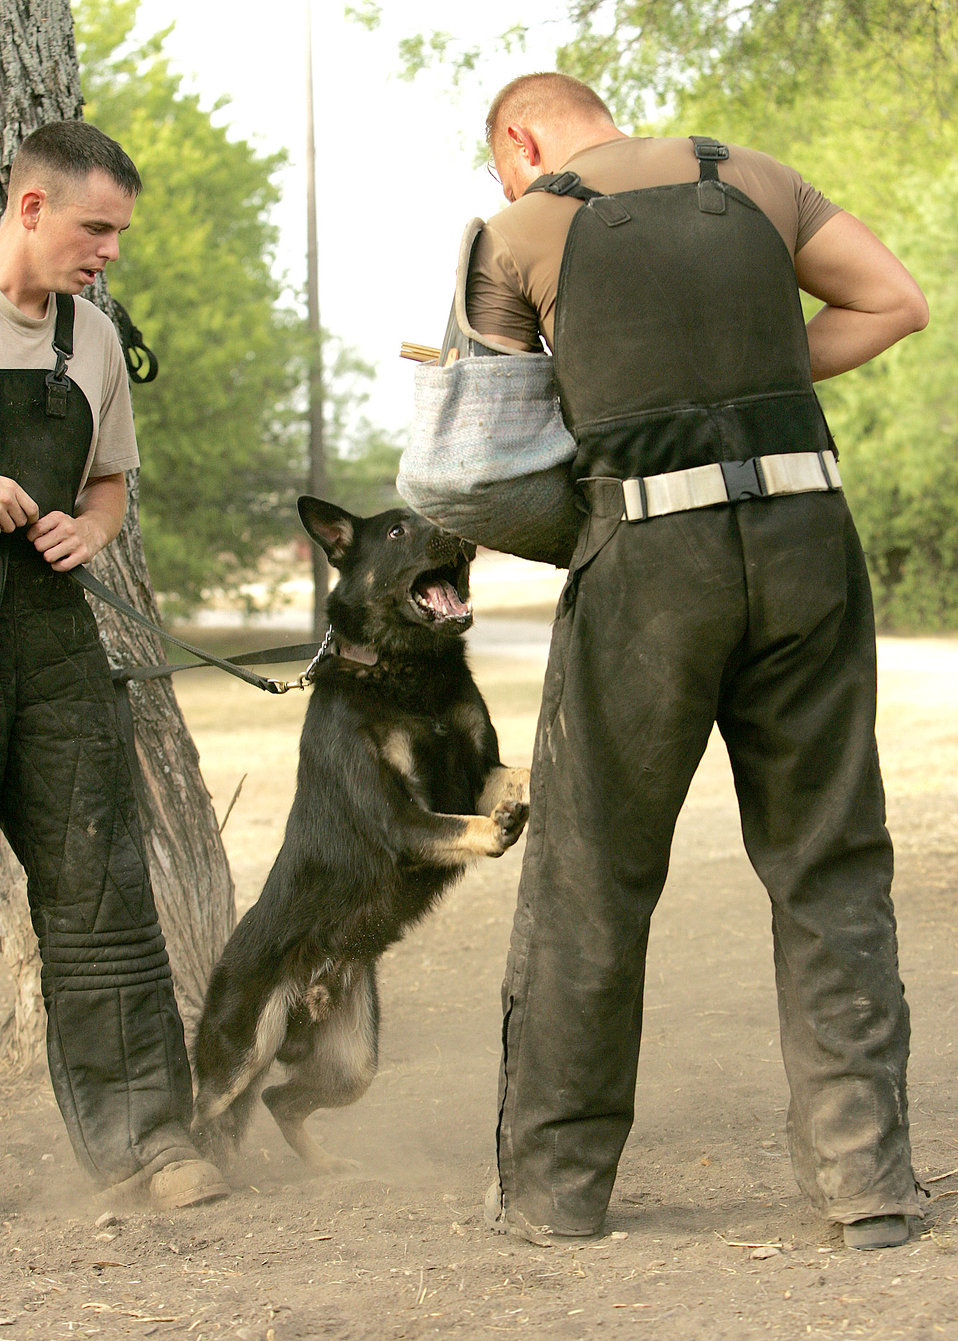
Total Force MWD training

Army Staff Sgt. Chuck Bench holds Dino on a short leash while Tech. Sgt. Nicholas Gorham presents a bite sleeve to the military working dog at Lackland Air Force Base, Texas, Aug. 29. Sergeants Bench and Gorham are military working dog instructors with the 341st Training Squadron at Lackland.